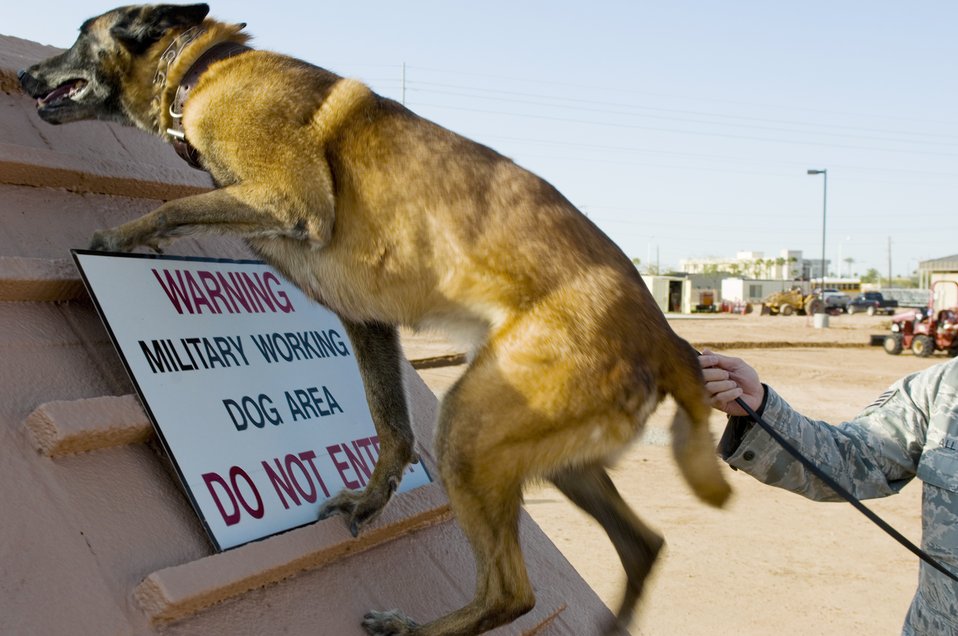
Working dogs take final run

Staff Sgt. Kyle Alltop runs Roc through his final run of the obstacle course at the Military Working Dog kennels at Luke Air Force Base, Ariz., March 25, 2010. Roc has served as a narcotics detection dog for nine years. Sergeant Alltop is a military working dog handler with the 56th Security Forces.